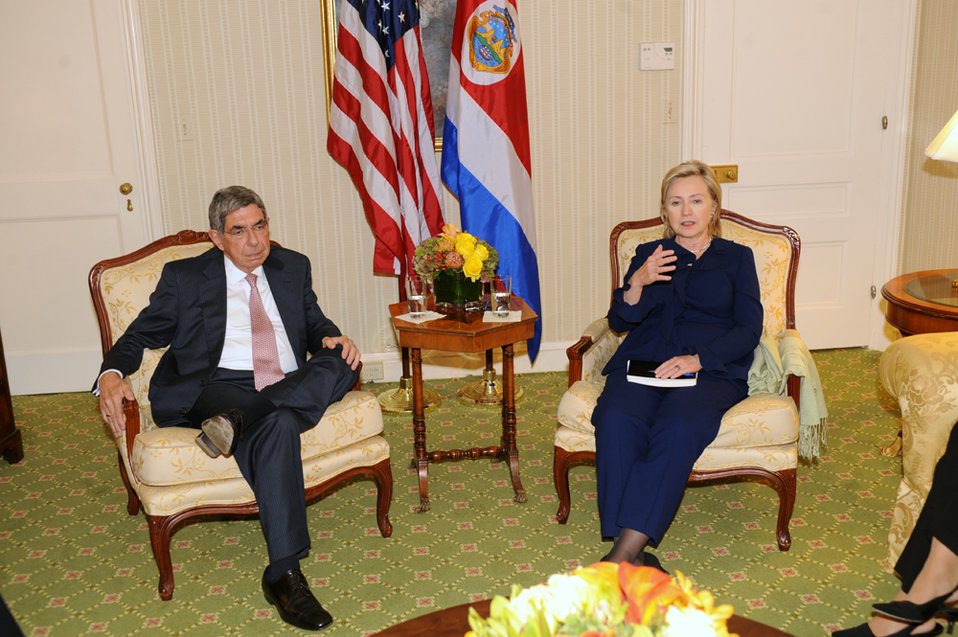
UNGA 2009: Secretary Clinton Meets With Costa Rican President

U.S. Secretary of State Hillary Rodham Clinton meets with Costa Rican President Óscar Arias at the Waldorf Astoria hotel during the 64th Session of the UN General Assembly in New York City, New York September 21, 2009.